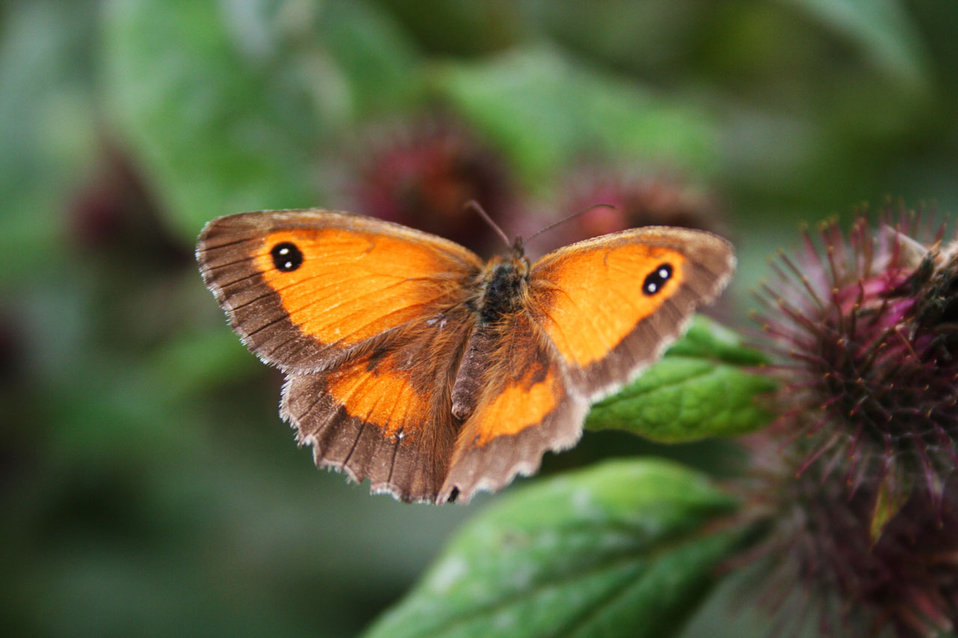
Butterfly on flower

Butterfly sitting on flower.